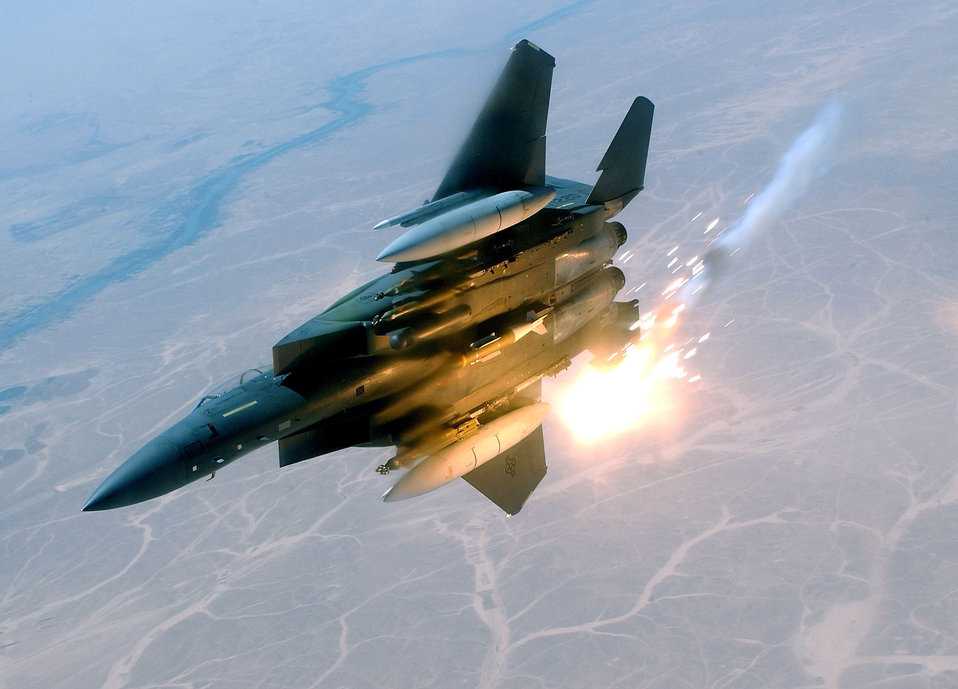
Oct. 11 airpower summary: F-15s provide close-air support

An F-15E Strike Eagle, from the 492th Fighter Squadron at Royal Air Force Lakenheath, England, pops flairs during a combat sortie in Southwest Asia. The F-15E's primary role in Afghanistan is providing close-air support for ground troops.